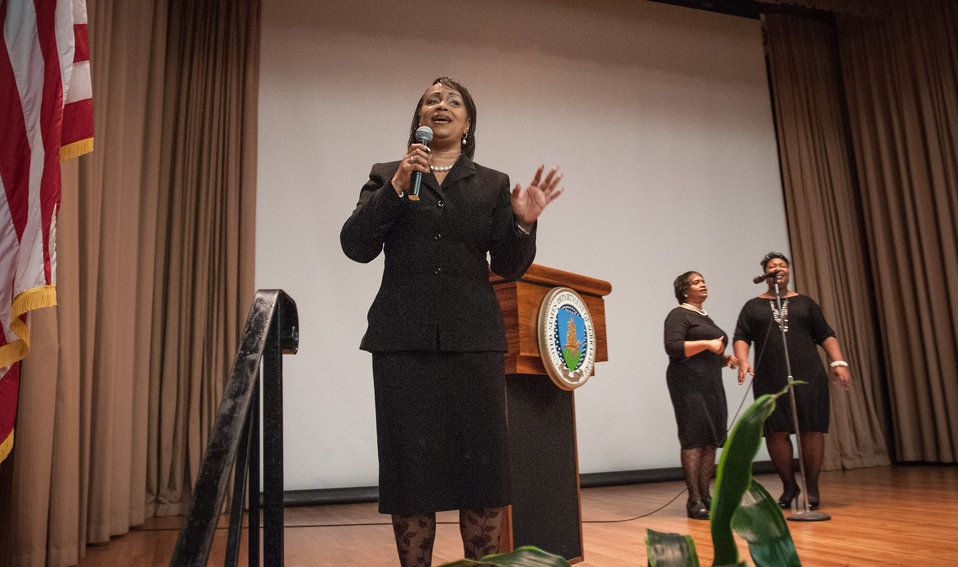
Pamela Carter, Rita Meade and Reedema Rock sing “I’m every Woman” to close-out the 2013 Women’s History Month Observance event, “Women Inspiring Innovation Through Imagination: Celebrating Women in Science, Technology, Engineering, and Mathematics, on Thursday, March 21, 2013, in Washington, D.C.